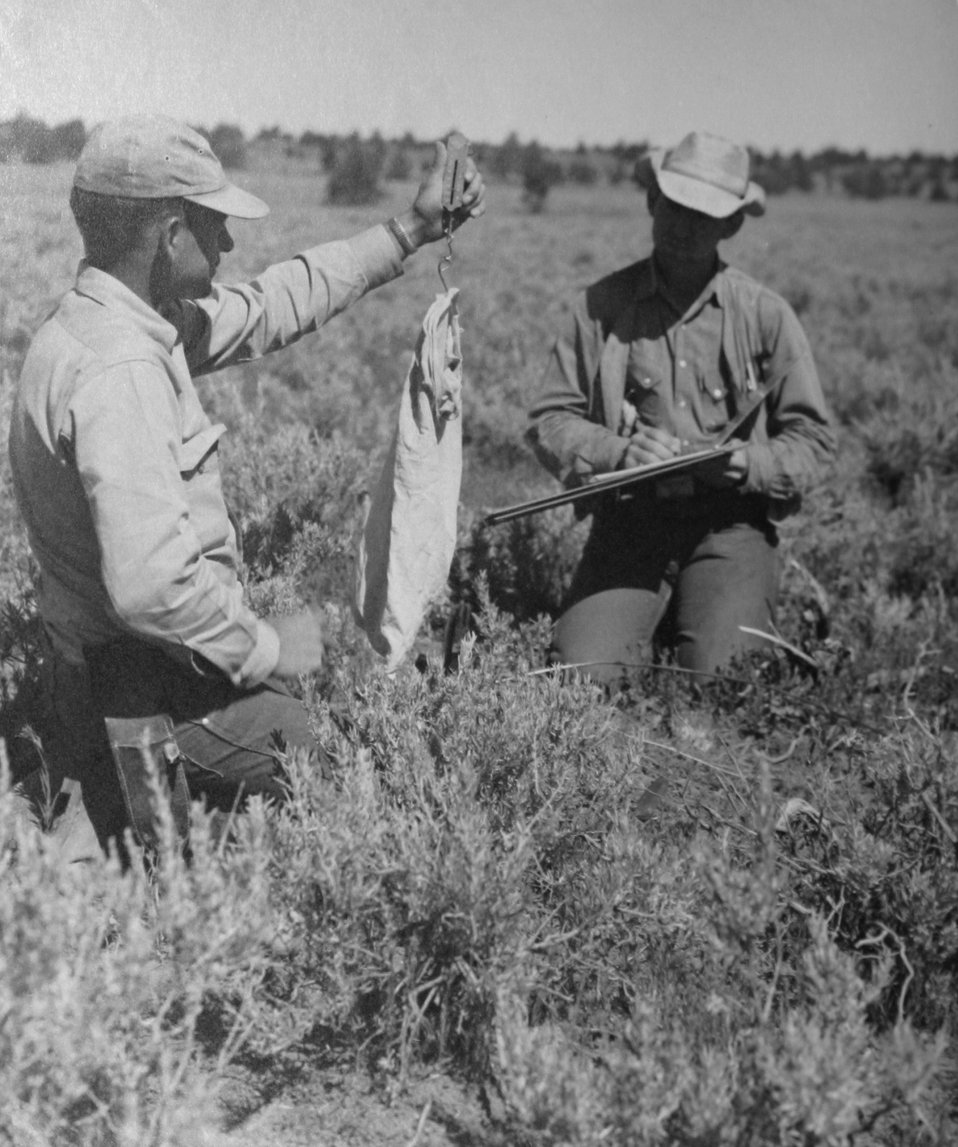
Coducting Range Sruvey circa 1950s